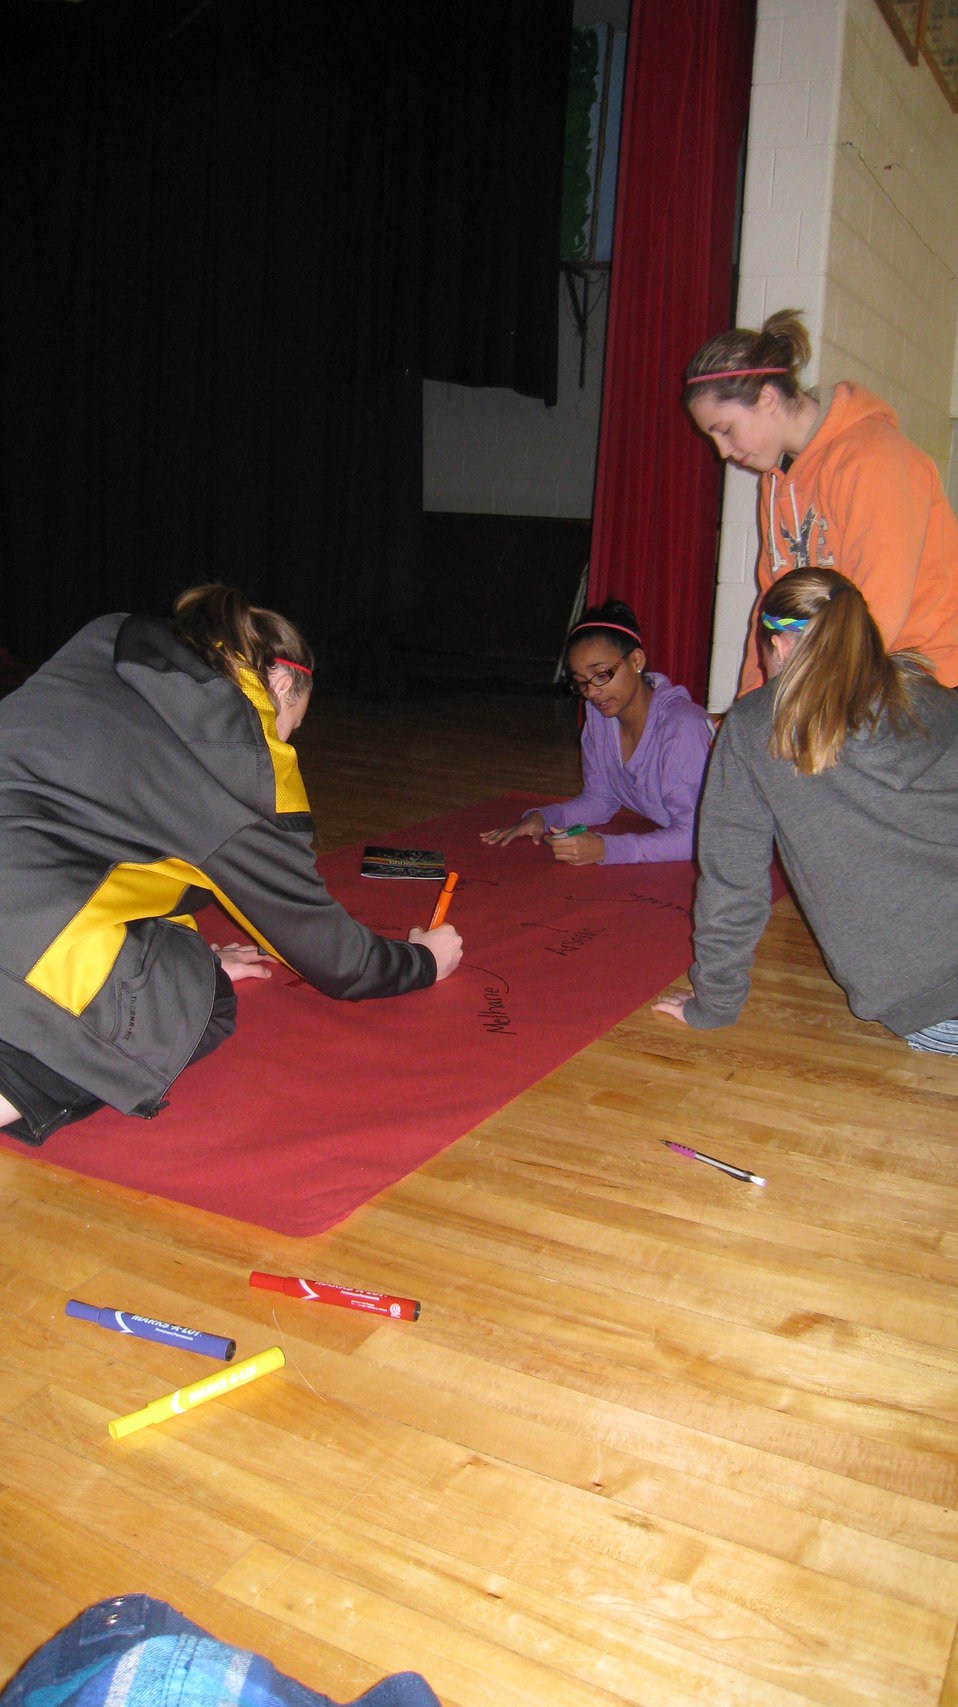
Poster Challange, NDFW 2014

Teenagers from the Van Buren County SAFE Coalition's, Youth Leadership Council (YLC) in Keosauqua, Iowa participate in various events during National Drug Facts Week, 2014.